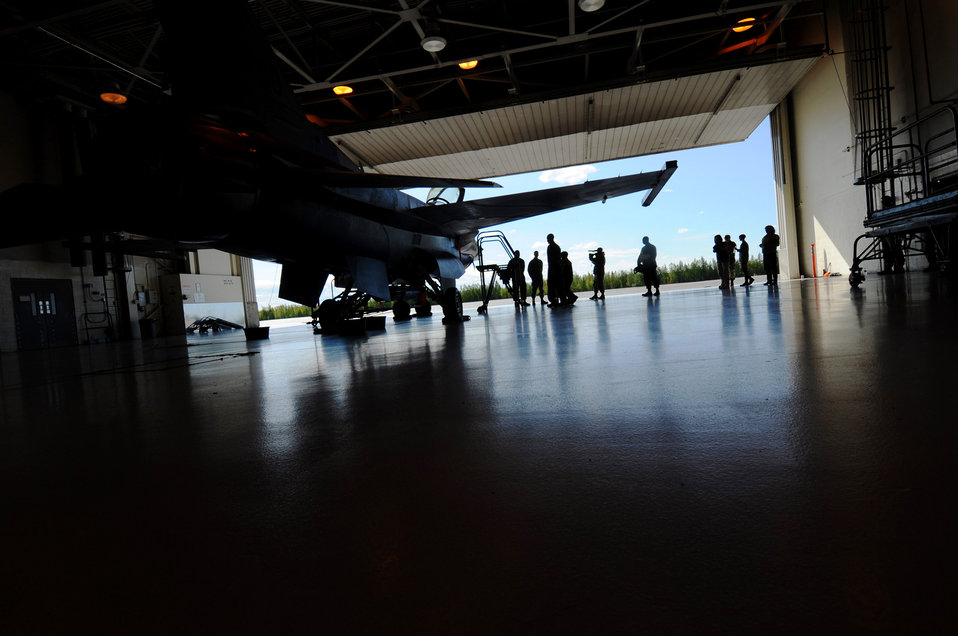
Eielson Airmen turn child into pilot for a day

Alex Lee is greeted by 354th Aircraft Maintenance Squadron crew chiefs as he enters the hangar prior to touring an F-16 Fighting Falcon Aug. 22 at Eielson Air Force Base, Alaska. Alex was born with congenital heart defects and Down syndrome and was selected by the Make-A-Wish Foundation for the Pilot for a Day program. The purpose of the program is to ease the pain of children who lost a normal childhood due to illnesses or disabilities.